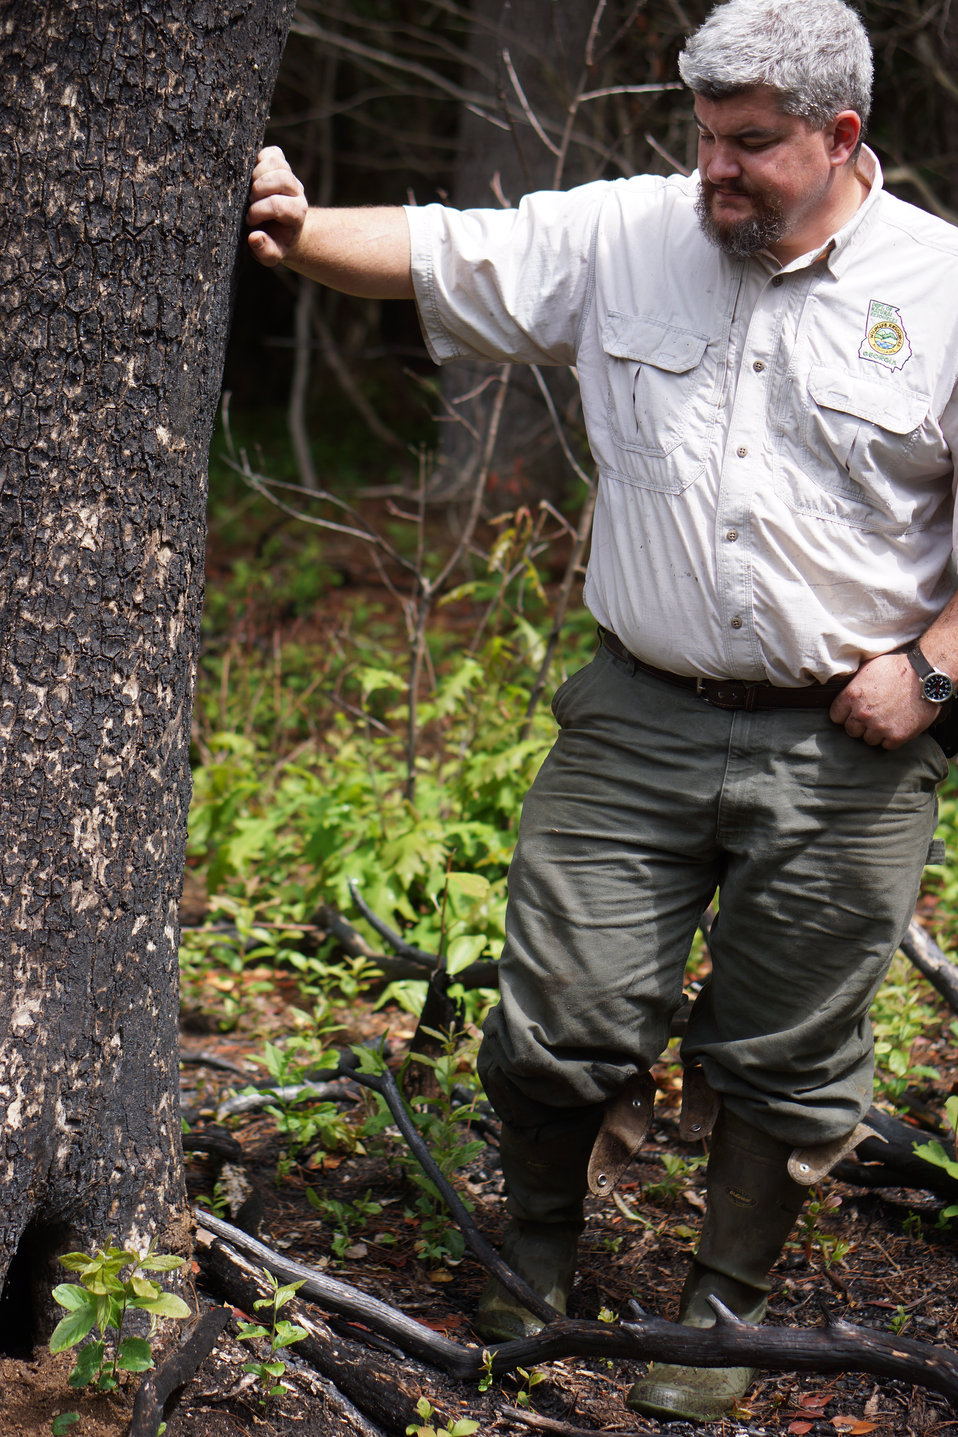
Thomas Floyd beside a

In May, bog conservationists from Tennessee, North Carolina, and Georgia convened in the north Georgia mountains for the spring, 2014 meeting of the Bog Learning Network. The event provided an opportunity for biologists to see, first hand, the result of management efforts at two north Georgia bogs. More importantly, the outings provided an opportunity to share innovative approaches to bog management, such as the role of the Georgia Plant Conservation Alliance in conserving rare plants and coordinating a cadre of volunteers to work on bog management.

The Bog Learning Network was convened in the winter of 2013 as a way to bring together people working for bog conservation across the Southern Appalachians. Southern Appalachian bogs are one of North America’s rarest habitats and home to many rare plants and animals.